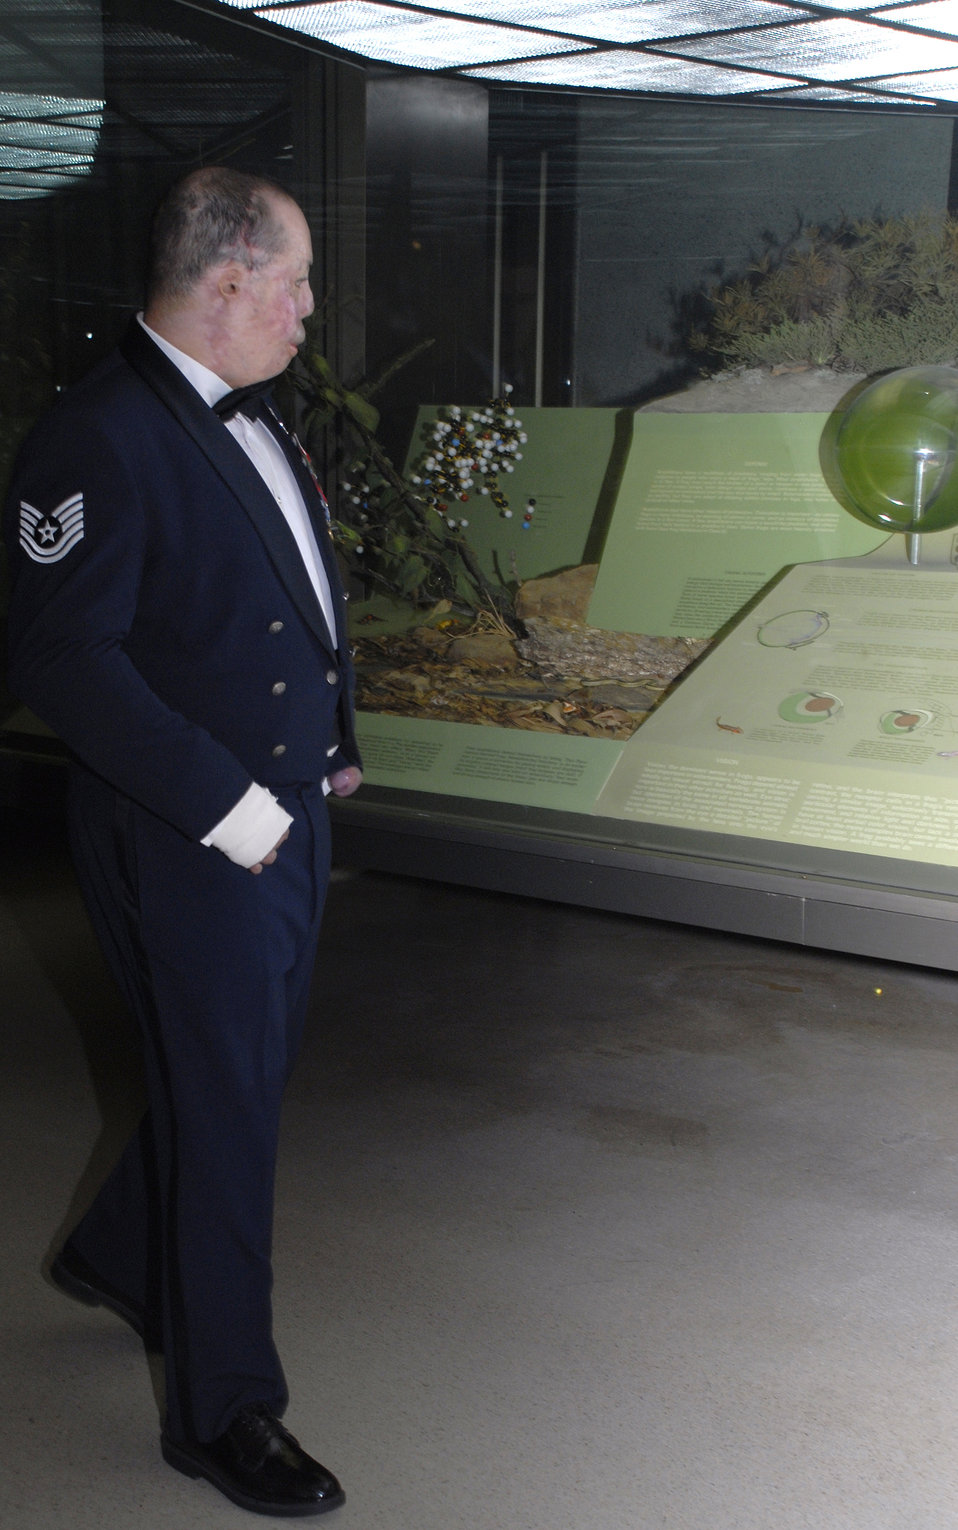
USO salutes wounded warriors in NYC

Tech. Sgt. Israel Del Toro views an exhibit at the American Museum of Natural History during this year's United Service Organizations'